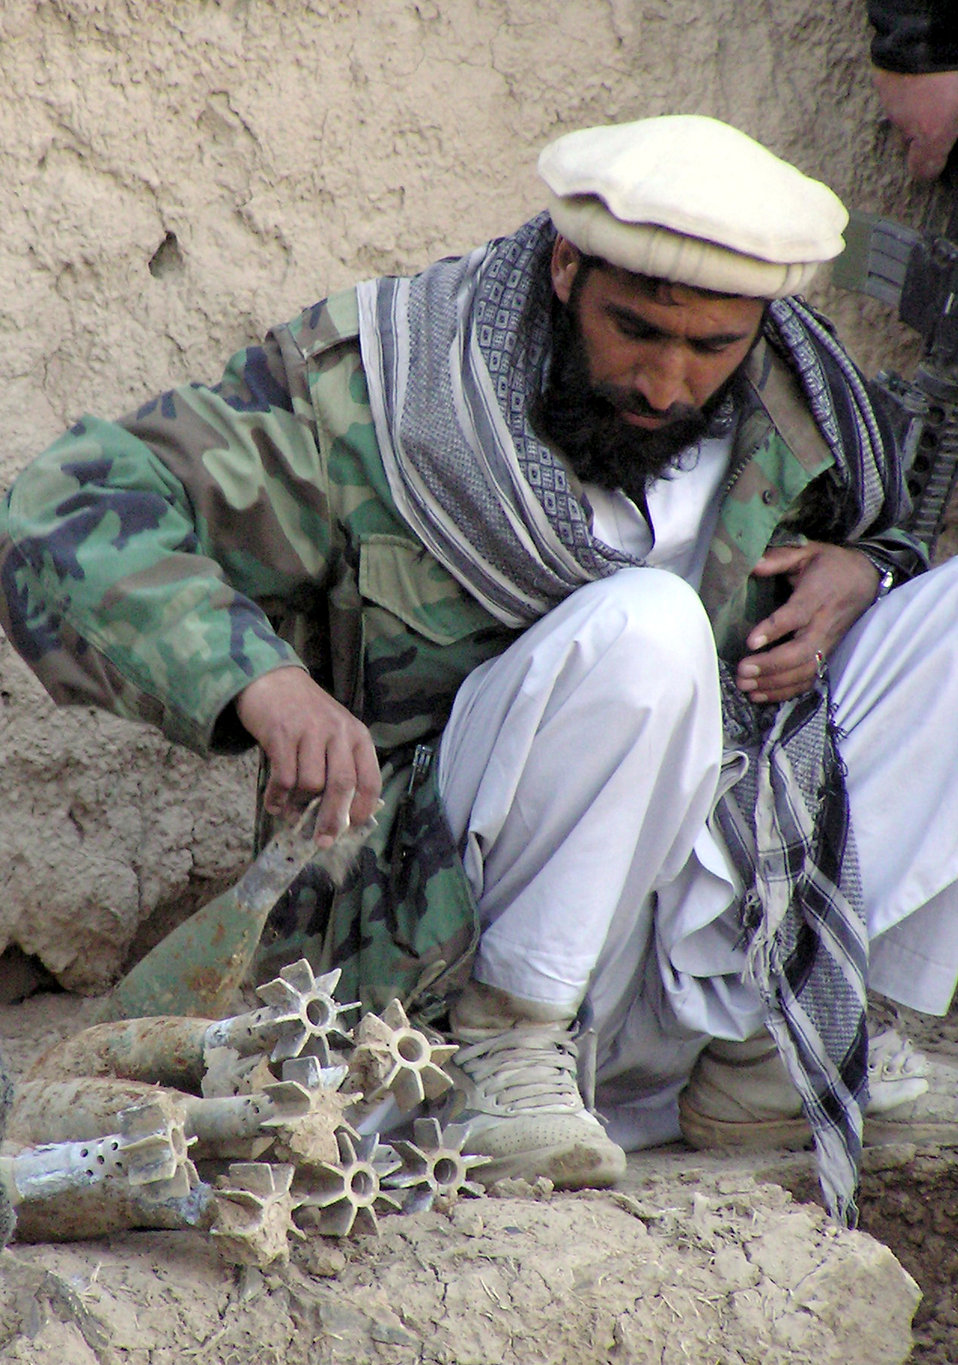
OSI faces evil

QALAKHEL, Afghanistan -- A village member helps unearth dozens of old, live mortar rounds embedded in a mud wall. Hundreds of weapons were found by agents of the Air Force Office of Special Investigations' anti-terrorism specialty team deployed from Lackland Air Force Base, Texas.